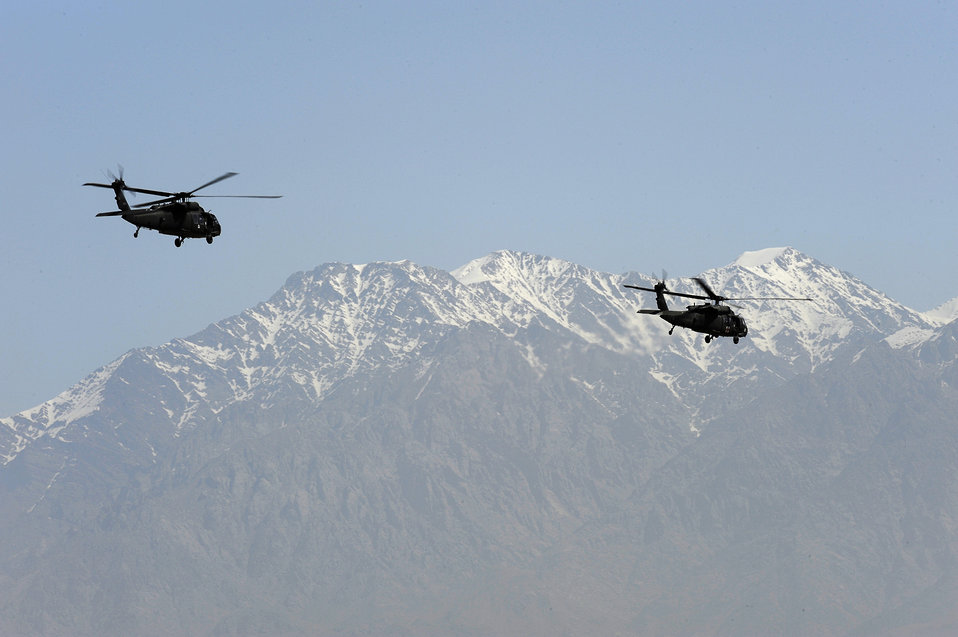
Bagram Airmen provide support

Two U.S. Army UH-60 Blackhawks fly above Bagram Airfield, Afghanistan, April 6, 2010.